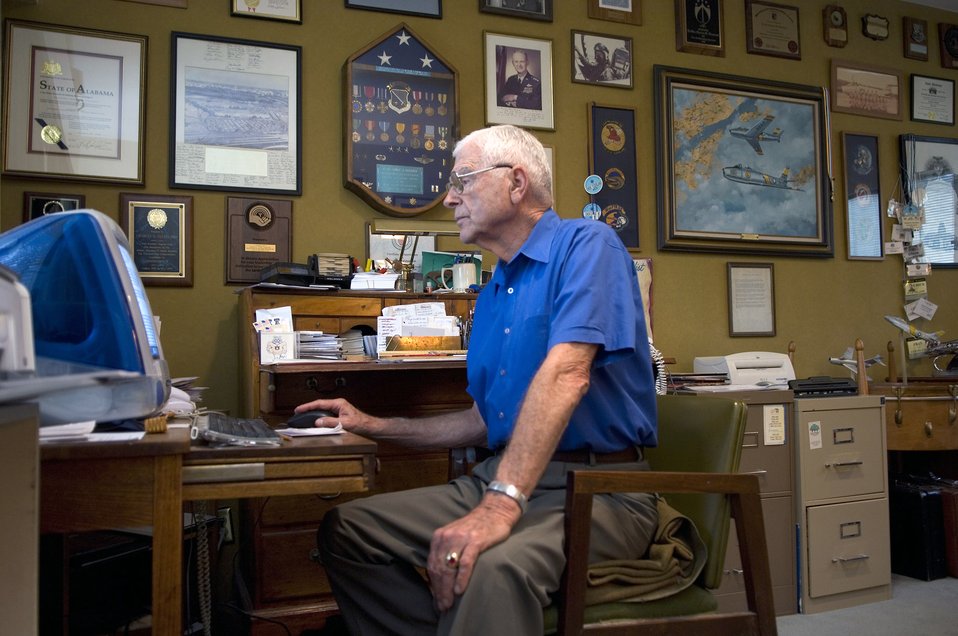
Retired general becomes Air Force's newest fighter ace

Retired Lt. Gen. Charles G. Cleveland searches his office computer for the official release provided by the Air Force confirming his jet fighter ace status during the Korean War. General Cleveland has been recognized by the Air Force as a jet fighter ace 55 years after the end of the Korean War. Newly discovered documentation by the Russian air force as well as eyewitness accounts by General Cleveland's wingmen proved evidence to support converting two probable kills into confirmed kills from dog fights over